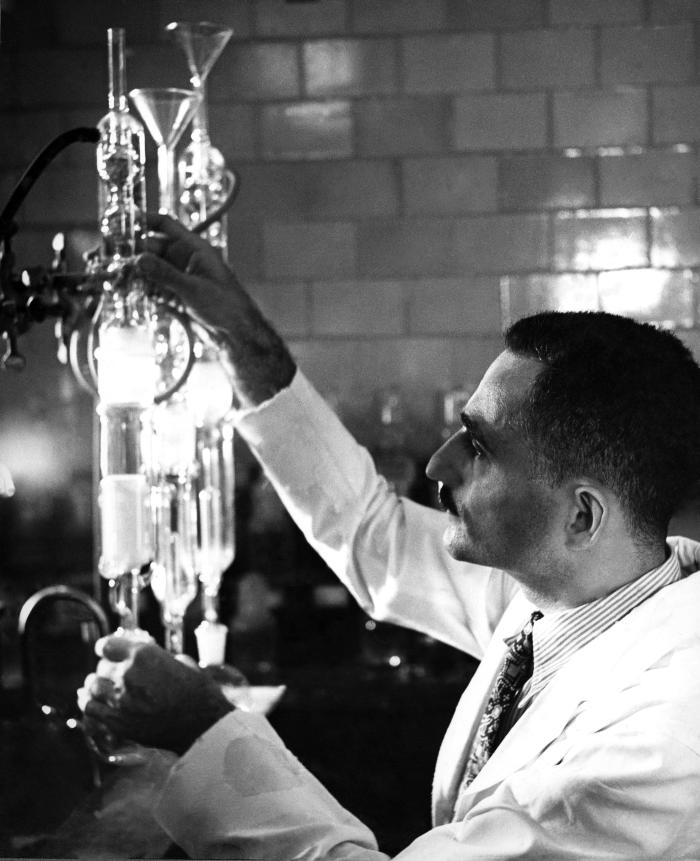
This November, 1943 photograph was provided by the Center for Disease Control's (CDC), National Institute for Occupational Safety and Health (NIOSH). Inside a laboratory setting, this image depicted a doctor who was in the process of extracting various dissolved constituents from solutions under analysis, using organic solvents to accomplish this task. It is not know which solvents were being used, or what was to be extracted, but many solvents are toxic, and are known carcinogens. However, you'll note that this man was wearing no protective garments such as a filtered breathing mask, goggles, or gloves, which would have protected him from airborne or spilt contaminants.